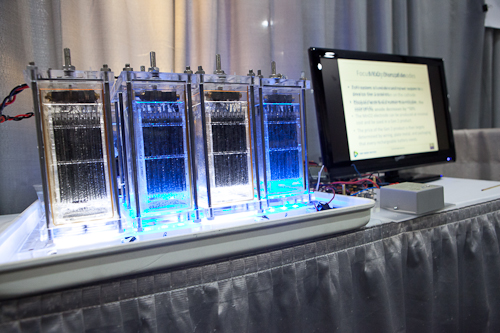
CUNY's

The nation's current electric grid has limited ability to store excess energy, so electricity must constantly be generated to match demand. If successful, CUNY Energy Institute’s flow assisted alkaline battery project would put the U.S. on a path towards creating a smarter grid with low-cost batteries that are capable of storing enough electricity to power homes, cars, and cities.